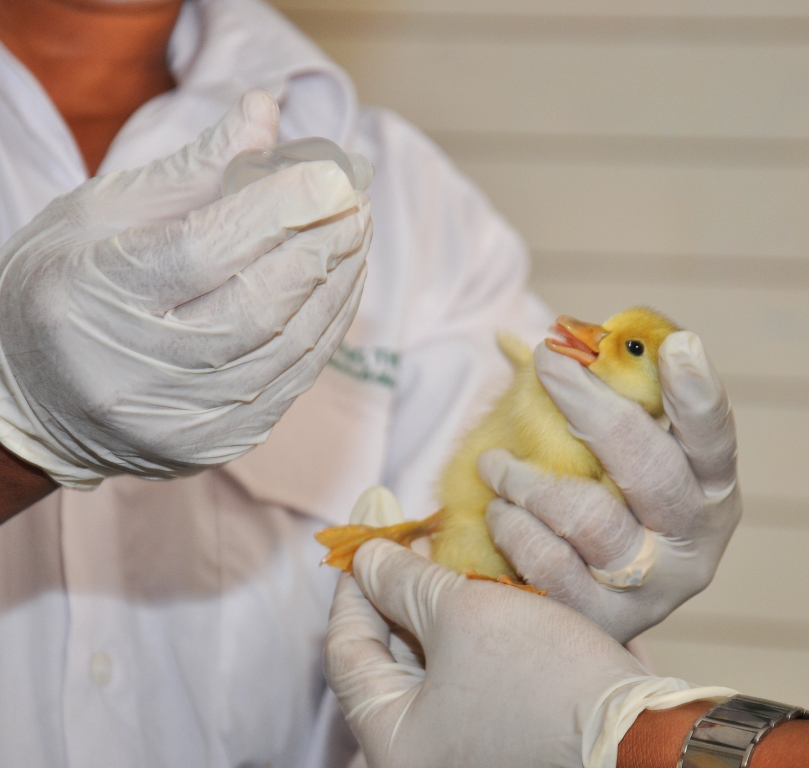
USAID trains animal health workers in poultry vaccination in Vietnam.

A local animal health worker learns how to vaccinate a duckling.